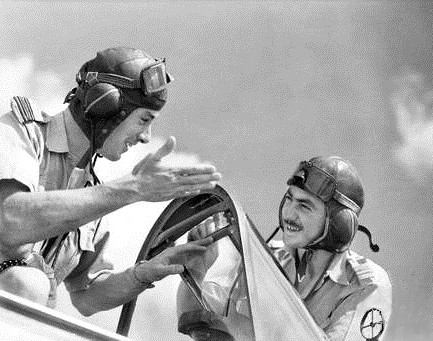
6 June 1941. Lydda, British Mandate of Palestine. Squadron Leader Peter Jeffrey of No. 3 Squadron who was recently awarded the D.F.C. goes over the points of the new American 'Tomahawk' with P/O Peter Turnbull one of the original and leading RAAF pilots in the Middle East before he takes the new machine up for a test flight.